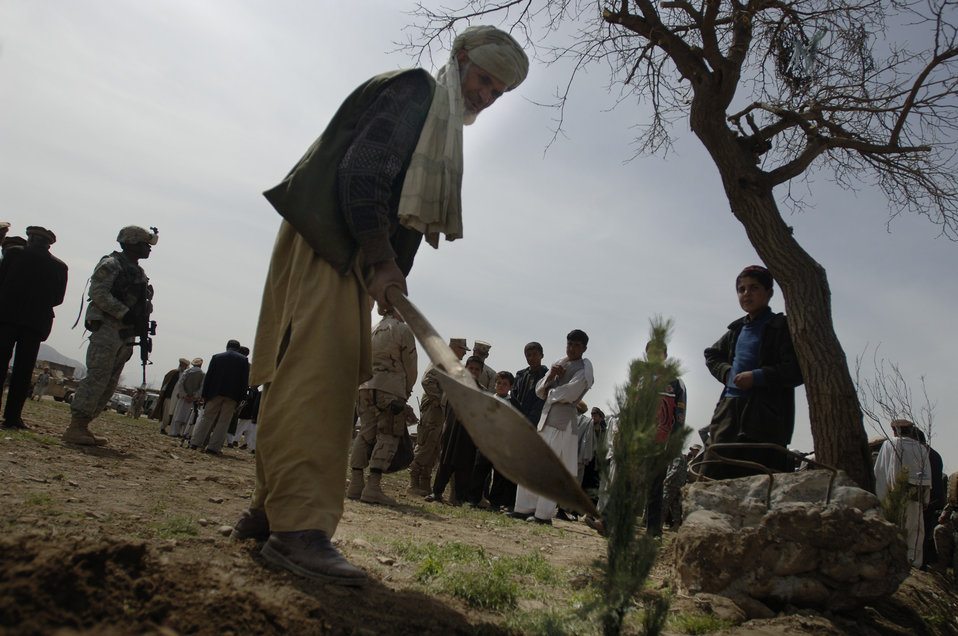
Bagram PRT rebuilds Afghanistan one school at a time

An Afghan plants one of 3,000 pine and fruit tree saplings donated by the U.S. Bagram Provincial ReconstructionTeam at Mahmud Raqi High School in the town of Deh Baba Ali, Afghanistan, March 26. Bagram PRT members aided in building the high school and also donated several bundles of school supplies.